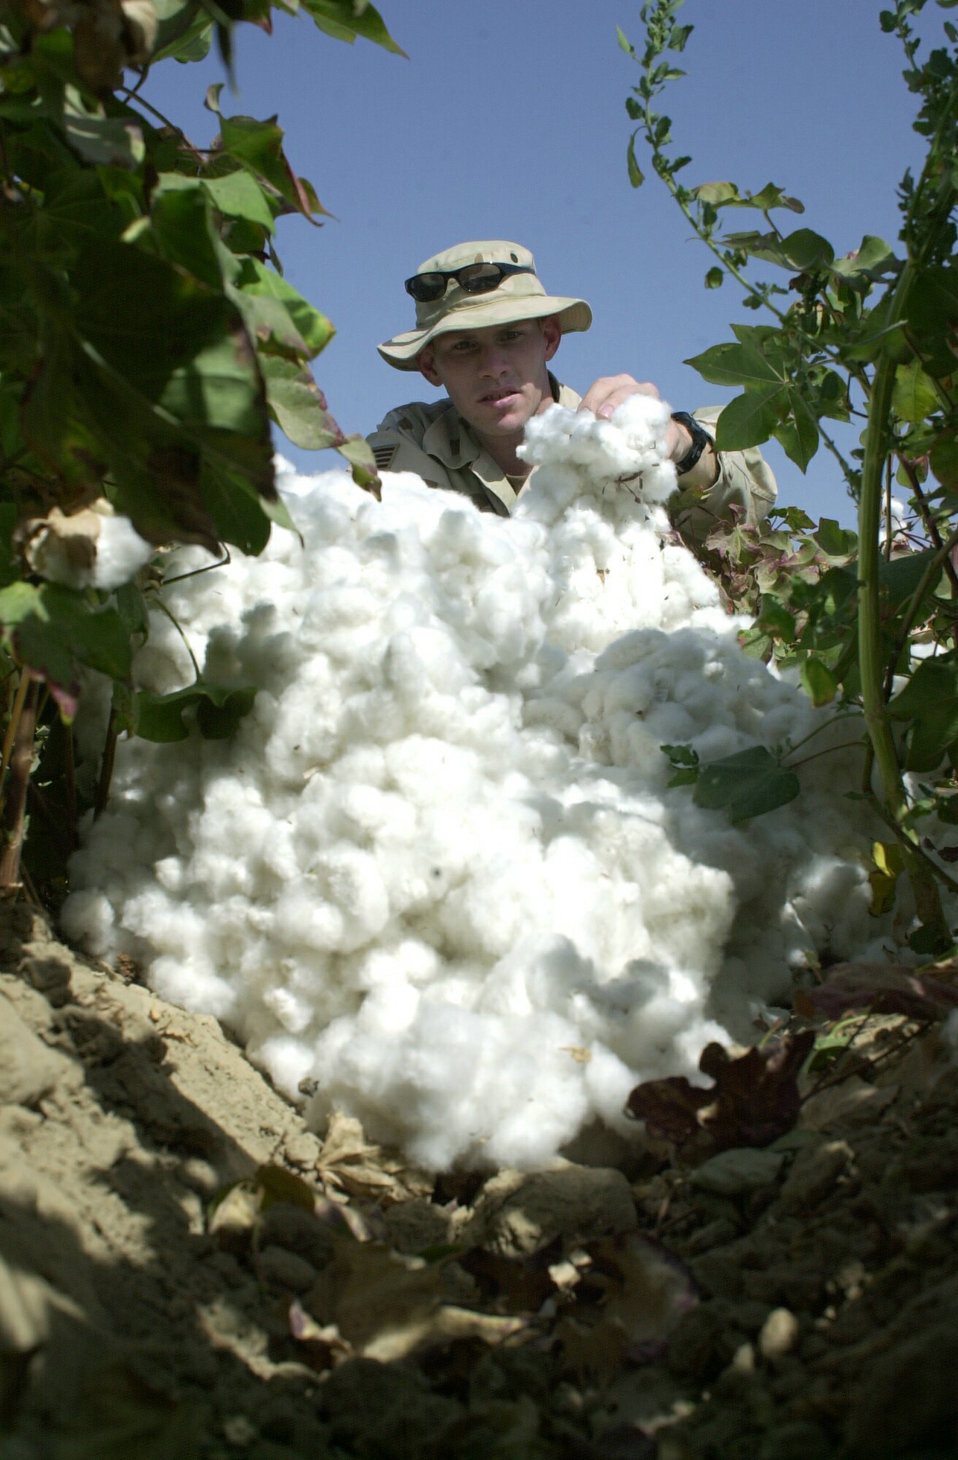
Picking cotton

NEAR KARSHI-KHANABAD AIR BASE, Uzbekistan -- Staff Sgt. Alexander Mason adds more cotton to the bale. Base Airmen and Soldiers helped local Uzbekistan women pick cotton during this year's harvest. All cotton is picked by hand. Local Uzbeks earn 3 cents for every 2 pounds of cotton picked.